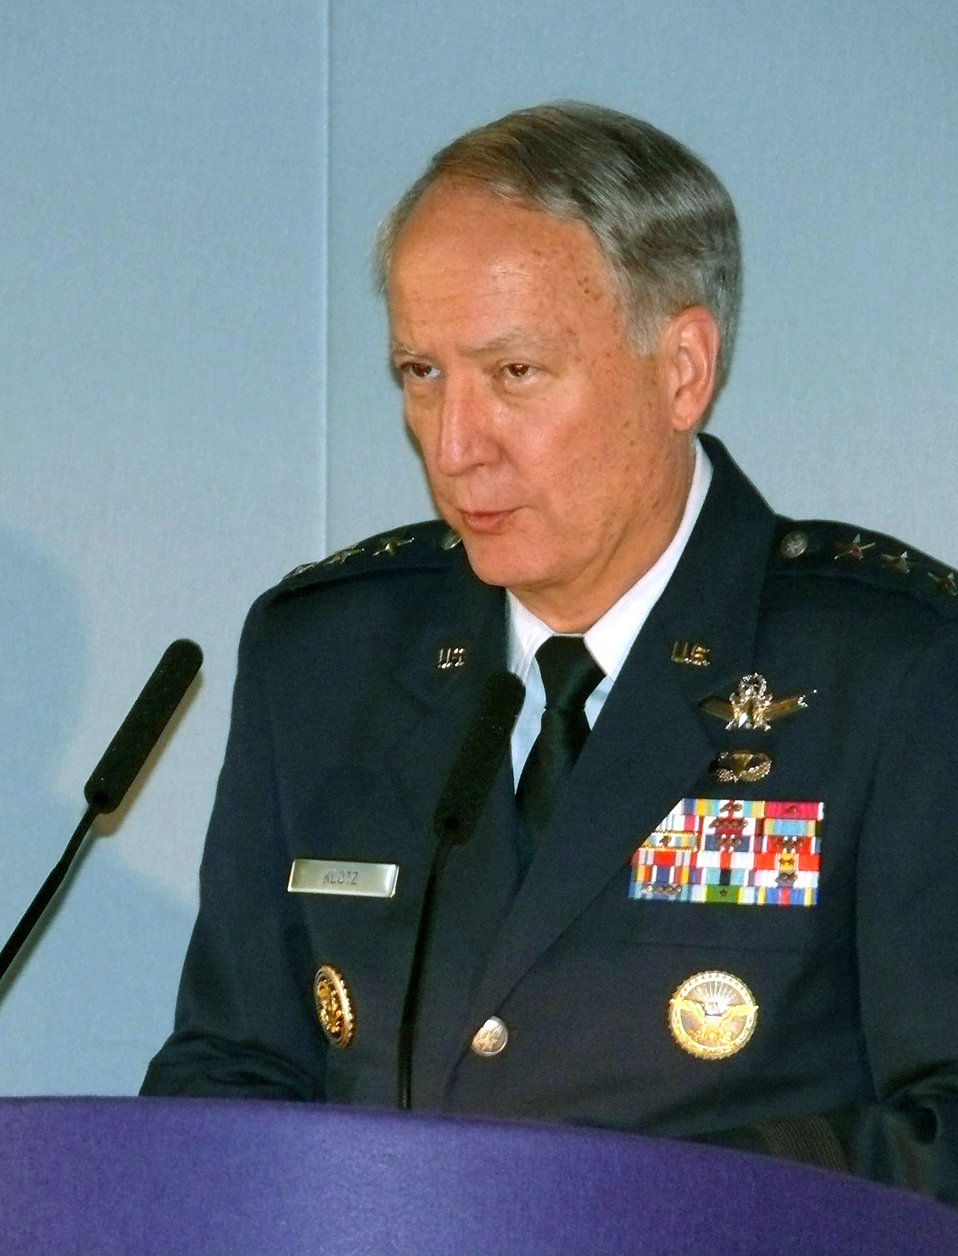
Aerospace leaders discuss challenges, opportunities

Lt. Gen. Frank G. Klotz speaks to military leaders and aerospace professionals at the Royal United Services Institute's air power conference in London May 24. General Klotz, the U.S. Space Command vice commander, spoke on future capabilities for space requirements and opportunities.